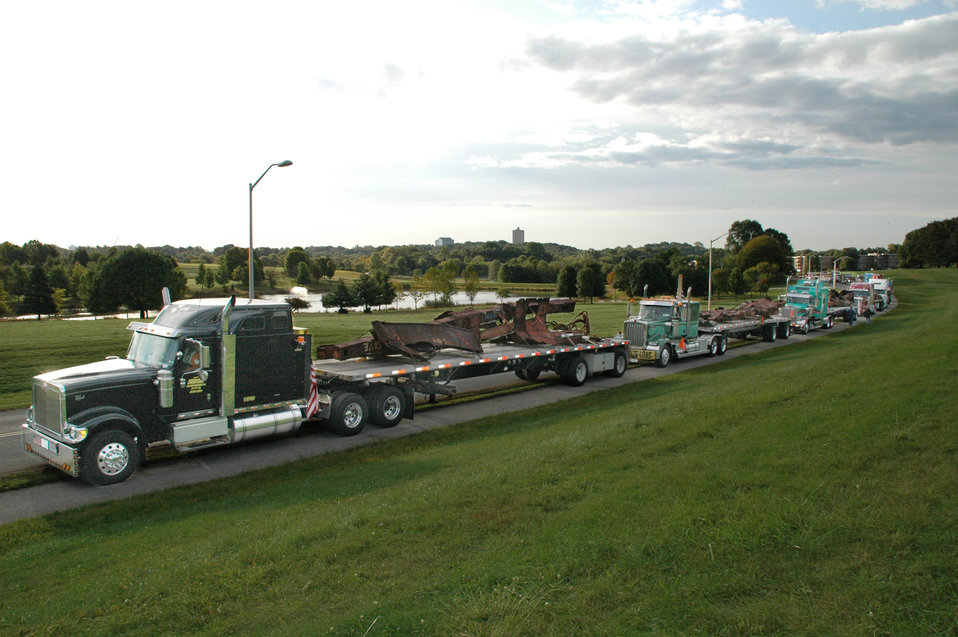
World Trade Center

Steel recovered the the World Trade Center towers returned to the Port Authority of New York and New Jersey.